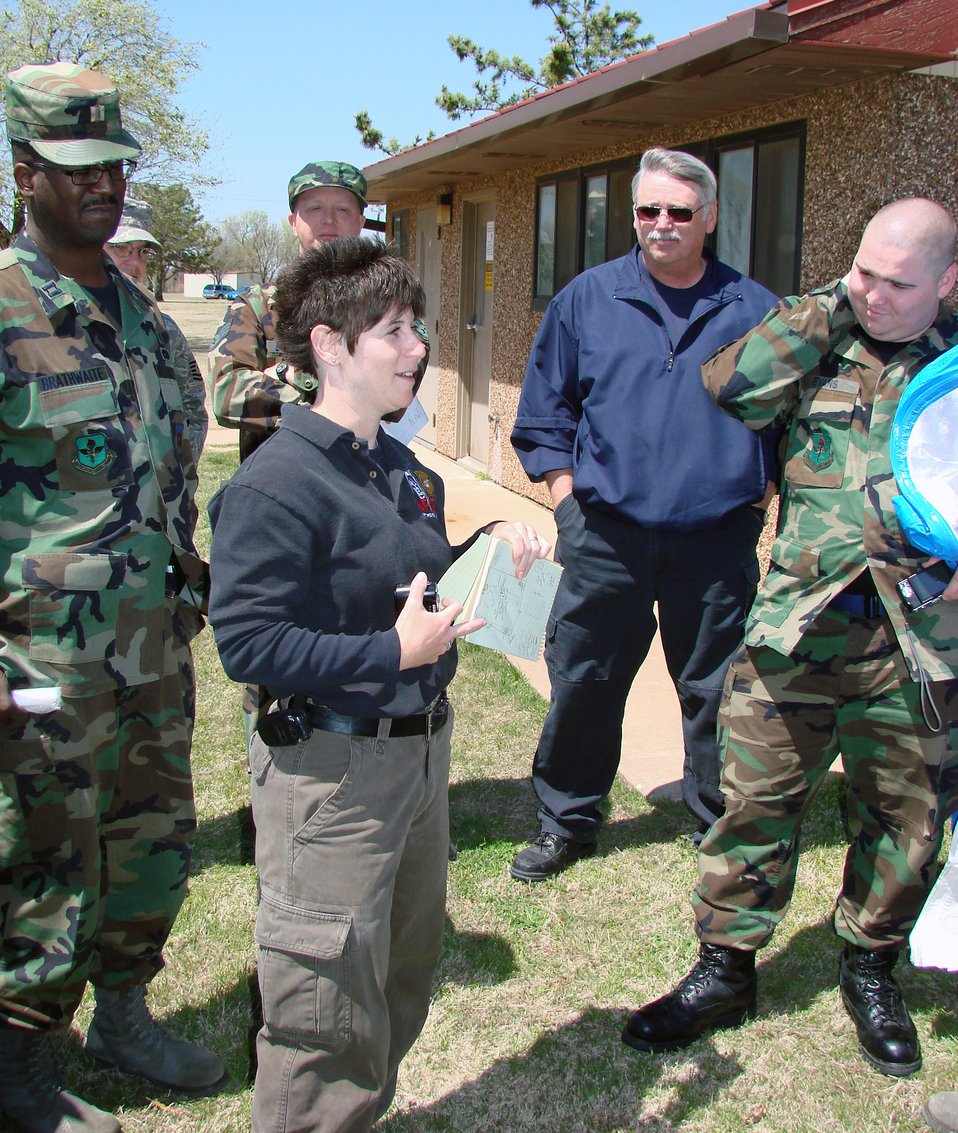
Did you say CSI or AFOSI?

Special Agent Jennifer Steel, an Air Force Office of Special Investigations forensic science consultant, reviews a practical exercise April 15 with people from bioenvironmental, AFOSI, security forces and the fire department at Vance Air Force Base, Okla., on how to preserve and process a chemical or weapon-of-mass-destruction scene that may be a result of criminal activity.